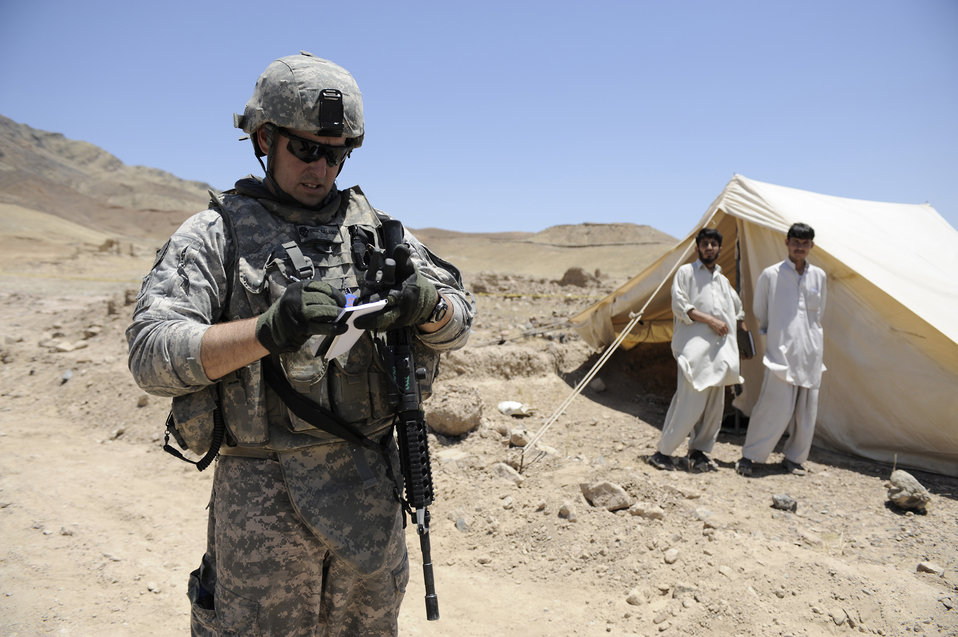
Afghanistan's future foundation

Tech. Sgt. Bryan Calaman, Nangarhar Provincial Reconstruction Team engineer, conducts a quality assurance inspection of a development site May 30, in Nangarhar Province, Afghanistan. The PRT is responsible for development and reconstruction projects in Nangarhar Province. The projects are built by local and contractors and are designed to improve the livelihood of the people living in the area. Sergeant Calaman is deployed from Lackland Air Force Base, Texas.